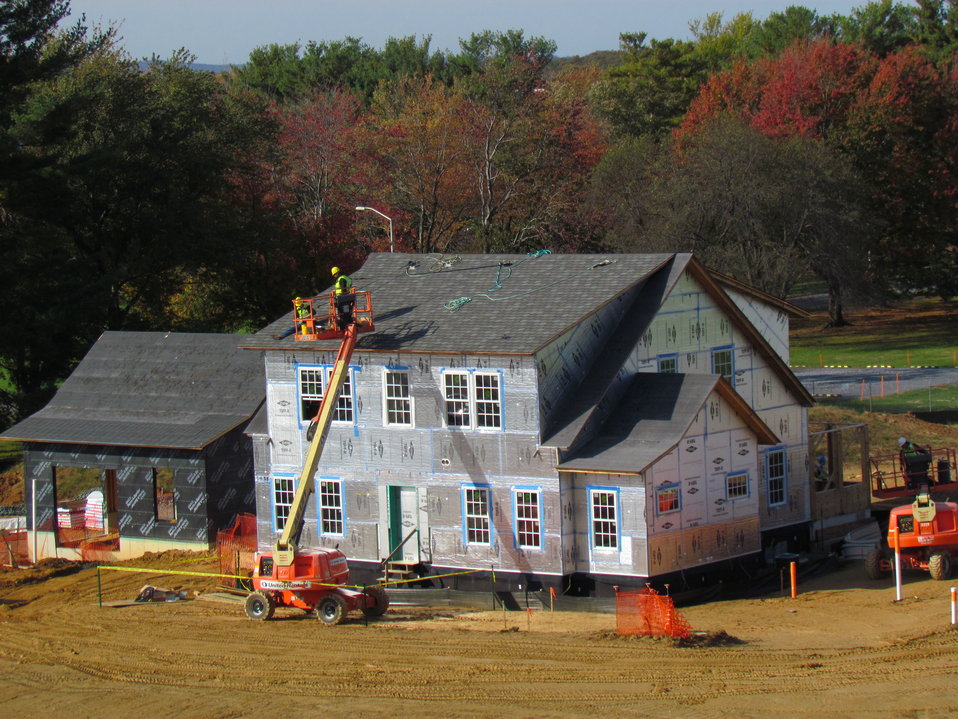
Net-Zero Energy Residential Test Facility - Workmen installing the rack system that will be used to attach photovoltaic panels to the roof.